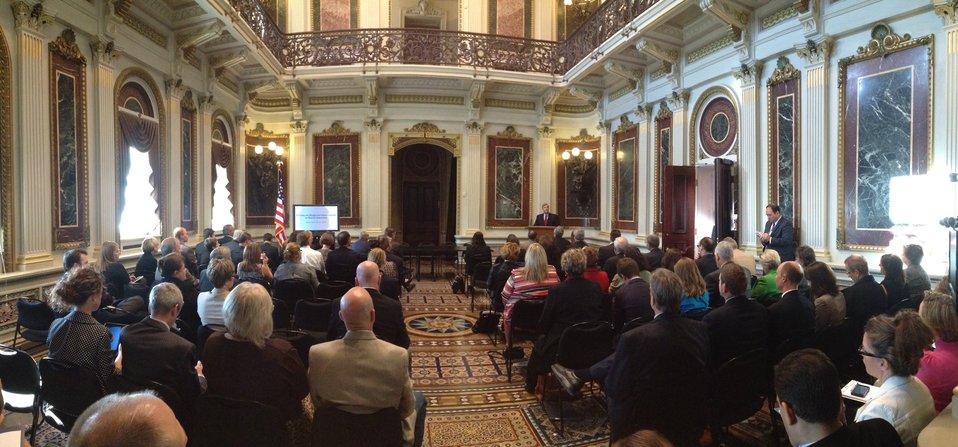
Agriculture Secretary Tom Vilsack addresses the 2nd Annual meeting of the White House Rural Forum concerning Regional Innovation in Rural America at the Executive Office Building in Washington, D.C. on Wednesday, Sep. 18, 2013.